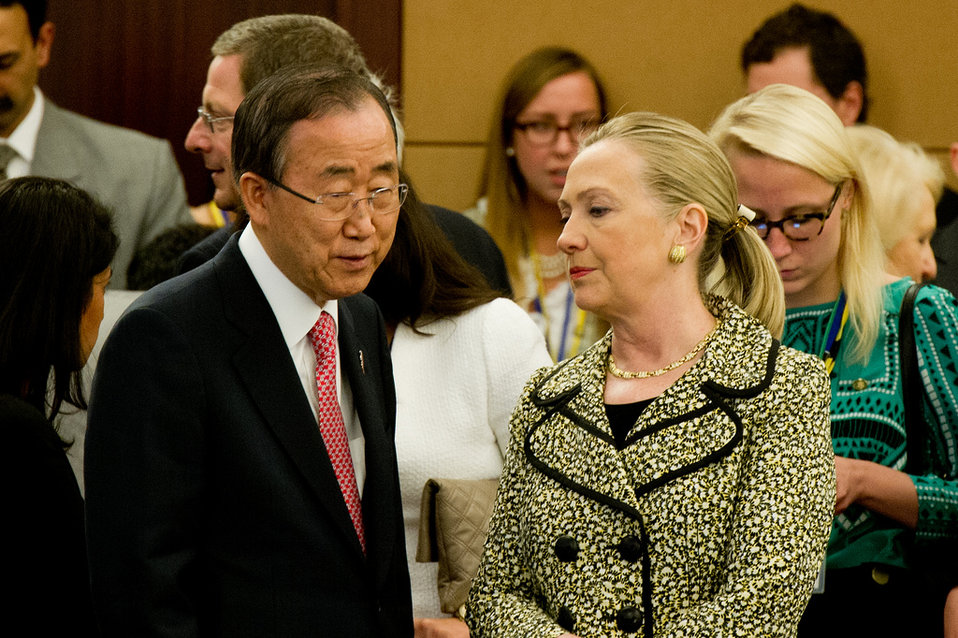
Secretary Clinton Meets With UN Secretary-General Ban

U.S. Secretary of State Hillary Rodham Clinton meets with UN Secretary-General Ban Ki-moon at the Tokyo Conference on Afghanistan in Tokyo, Japan, on July 8, 2012.